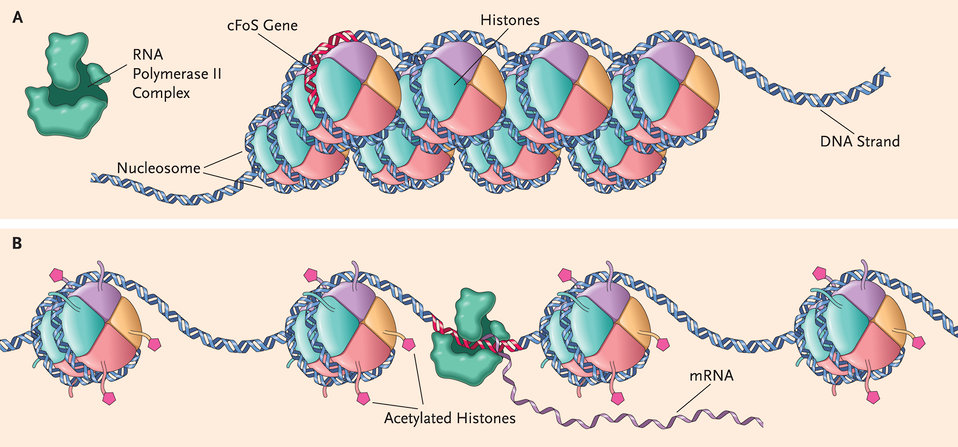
Gene Illustration

Cocaine activates genes through chromatin remodeling